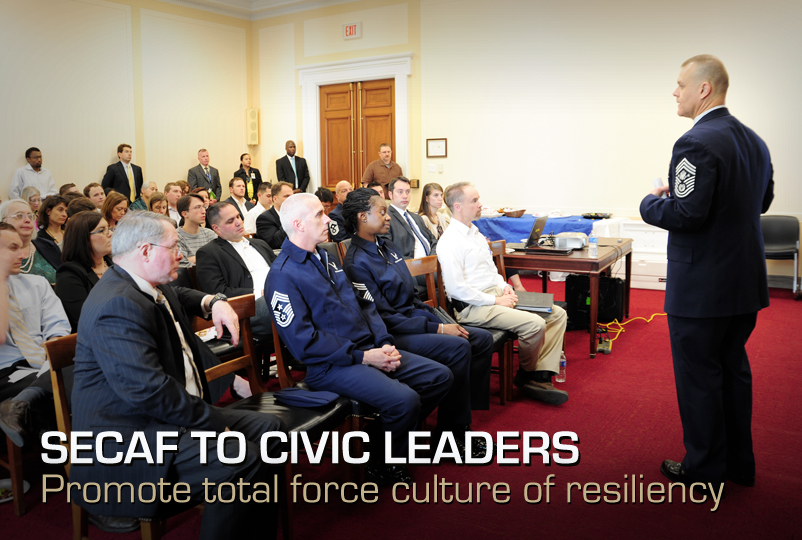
SecAF speaks to civic leaders